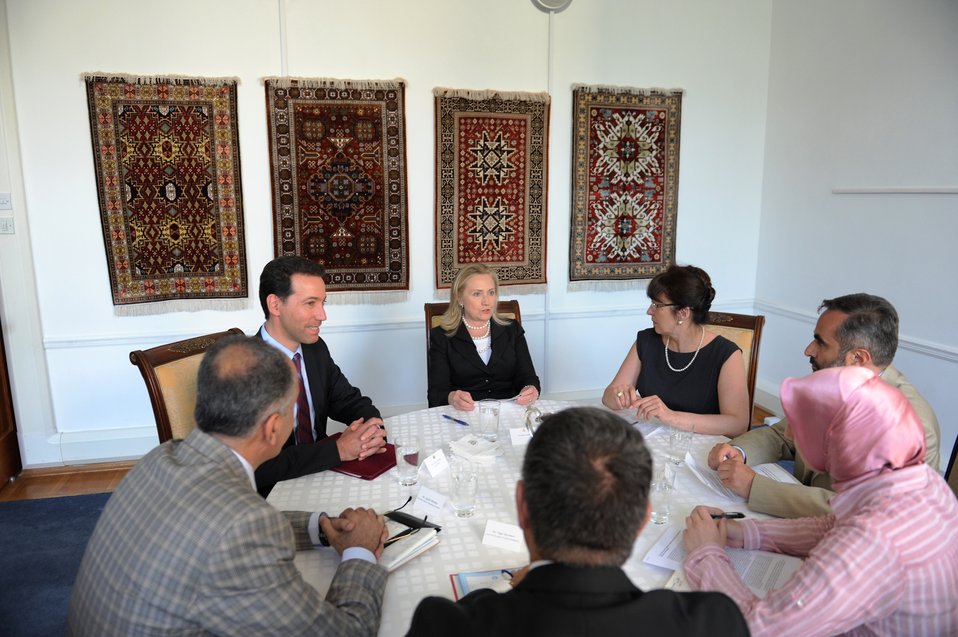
Secretary Clinton Meets With Civil Society Representatives

U.S. Secretary of State Hillary Rodham Clinton, with Embassy Baku Chargé d'Affaires Adam Sterling, seated to the right of the Secretary, meets with civil society representatives in Baku, Azerbaijan, on June 6, 2012.